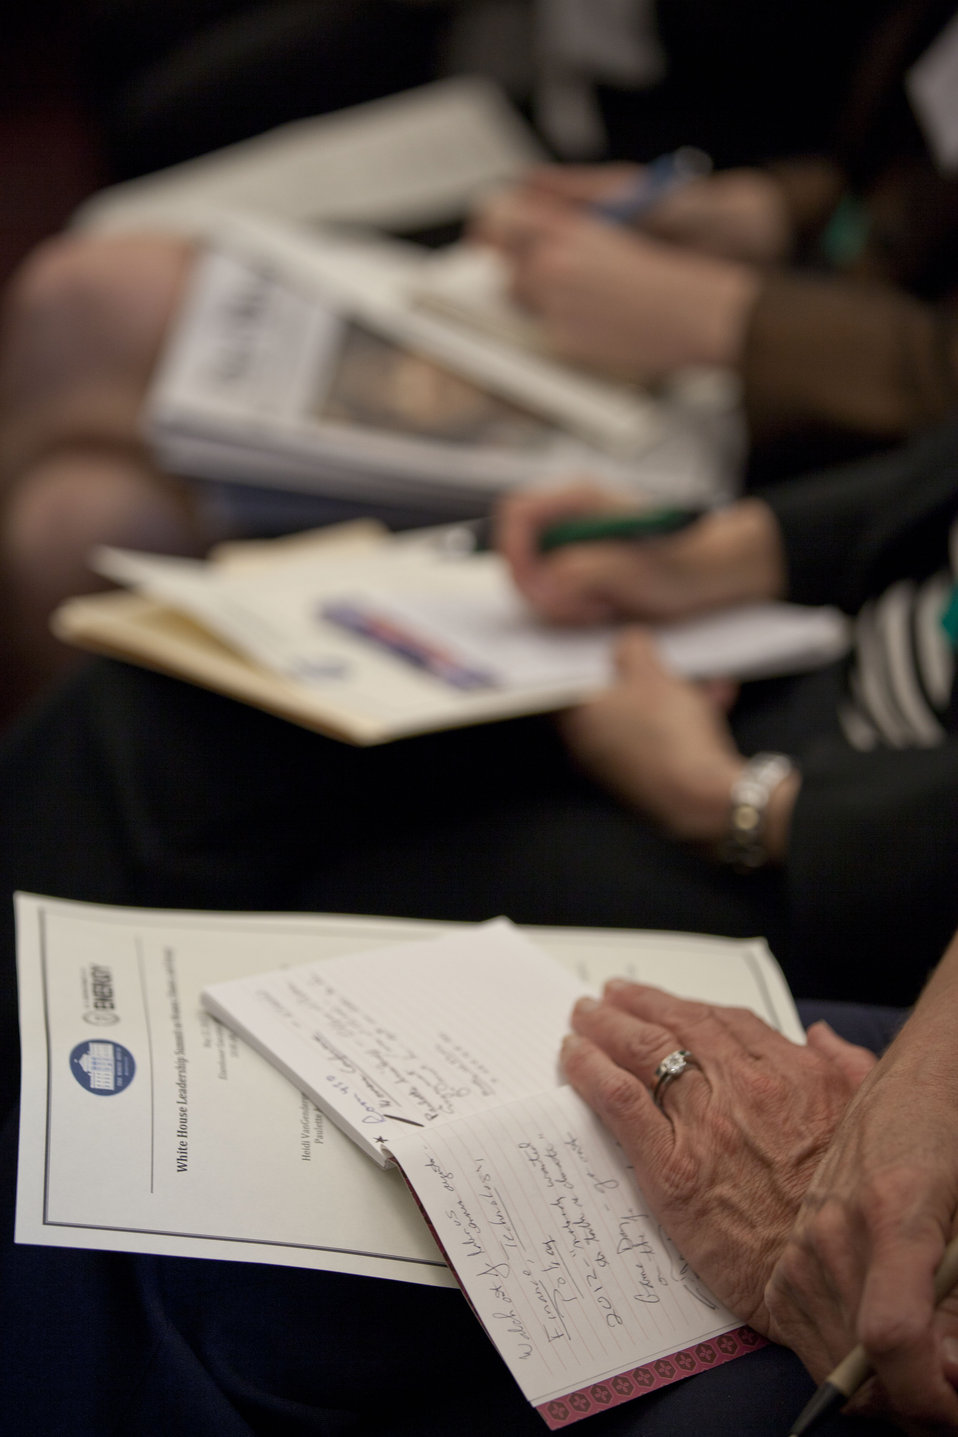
White House Leadership Summit on Women, Climate and Energy

Attendees were able to listen to and meet some of the nation's top women in the energy and climate fields.